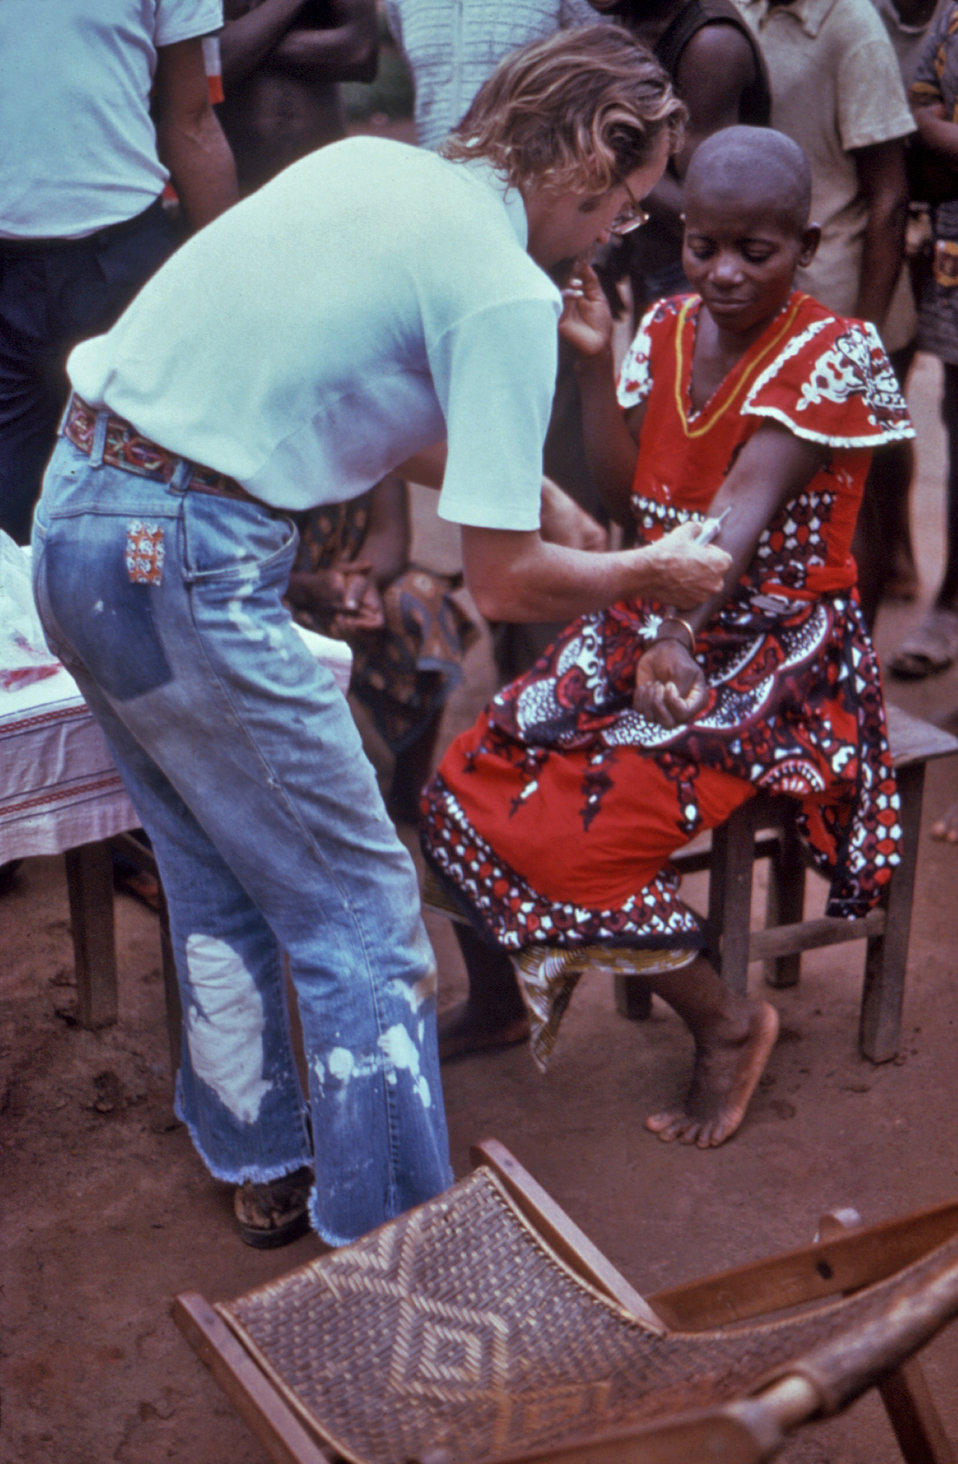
This was a member of an Ebola survey team shown as he extracted a blood sample from a resident of the town of Yambuku, Zaire during the country's 1976 outbreak.